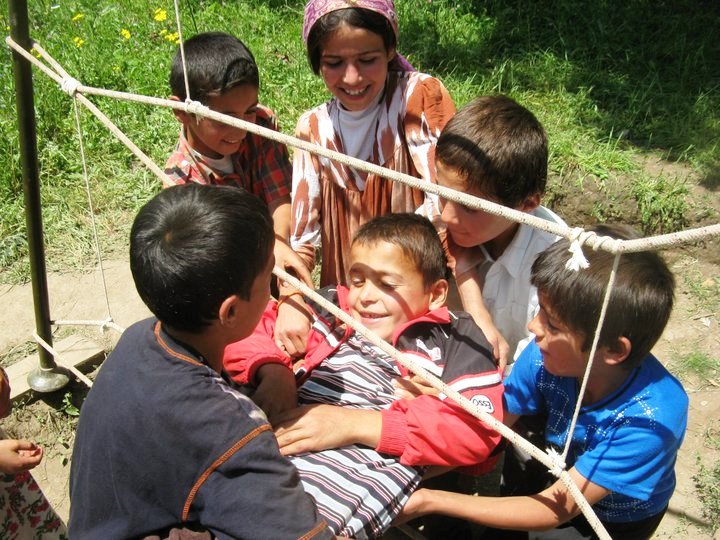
Tajik youth play games at Camp America, a U.S. Embassy Dushanbe-supported summer camp, in Hoyt, Tajikistan, in July 2010.